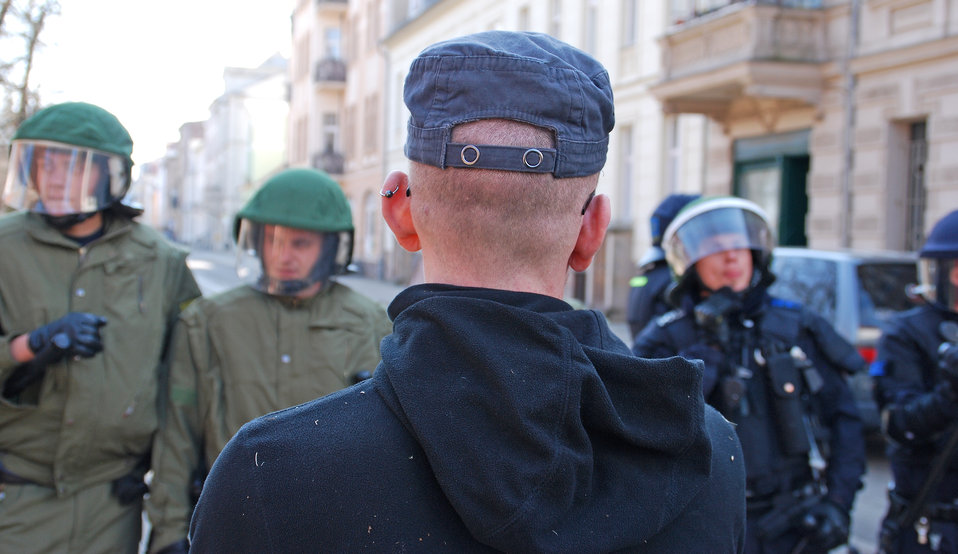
Proteste gegen den Nazi-Aufmarsch am 24.3.2012 in Frankfurt (Oder)